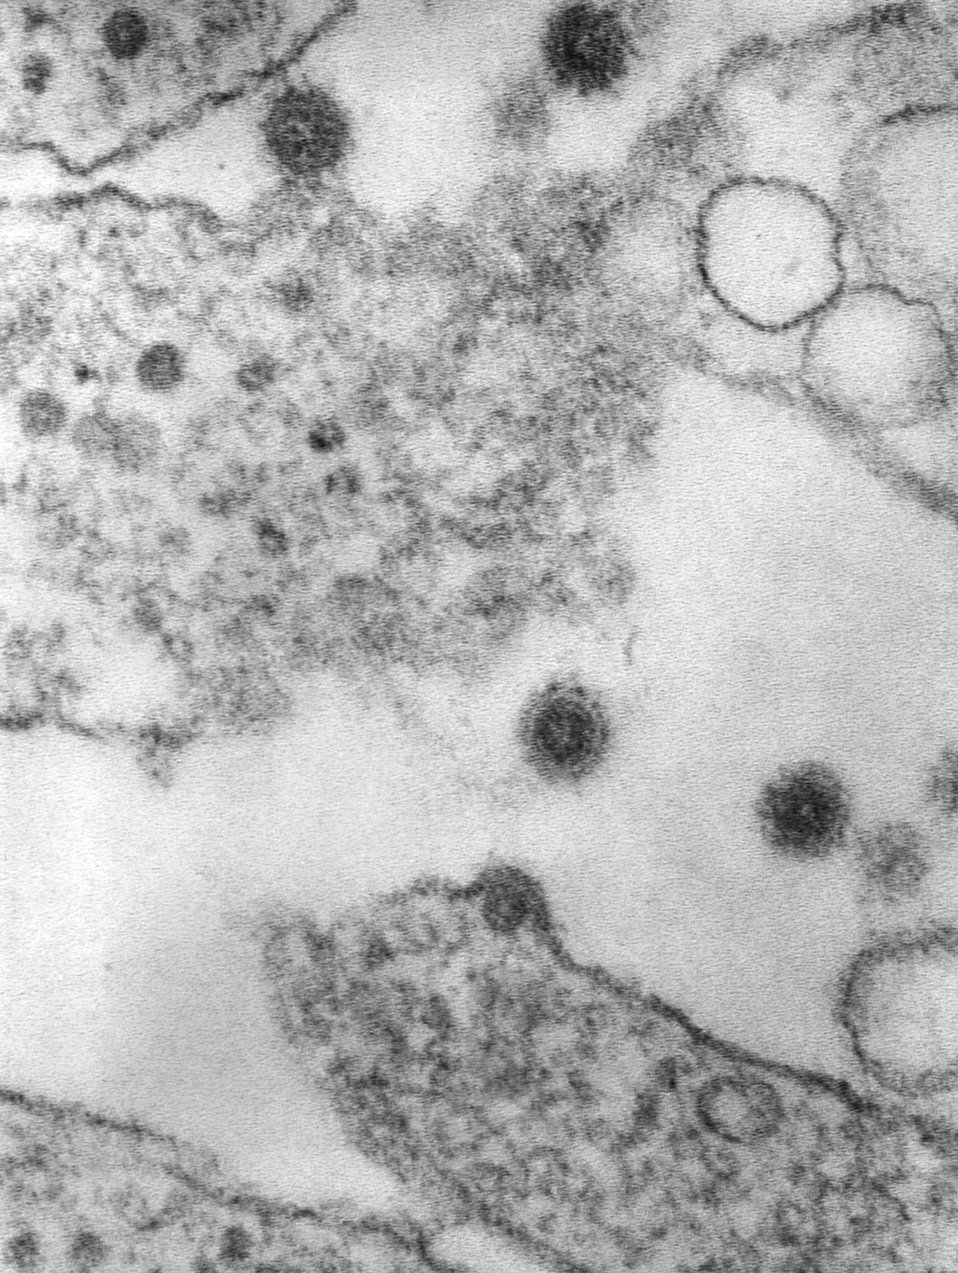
This 1975 transmission electron micrograph (TEM) revealed the presence of a number of Eastern Equine Encephalitis (EEE) virus virions in this tissue specimen. EEE is an zoonotic arbovirus, which means that it's spead to human beings through the bite of an infected arthropod, which in this case, is a mosquito. EEE virus (EEEV) occurs in the eastern half of the United States where it causes disease in humans, horses, and some bird species. Because of the high mortality rate, EEE is regarded as one of the most serious mosquito-borne diseases in the United States. EEE is a Togaviridae virus family member, and the genus Alphavirus.